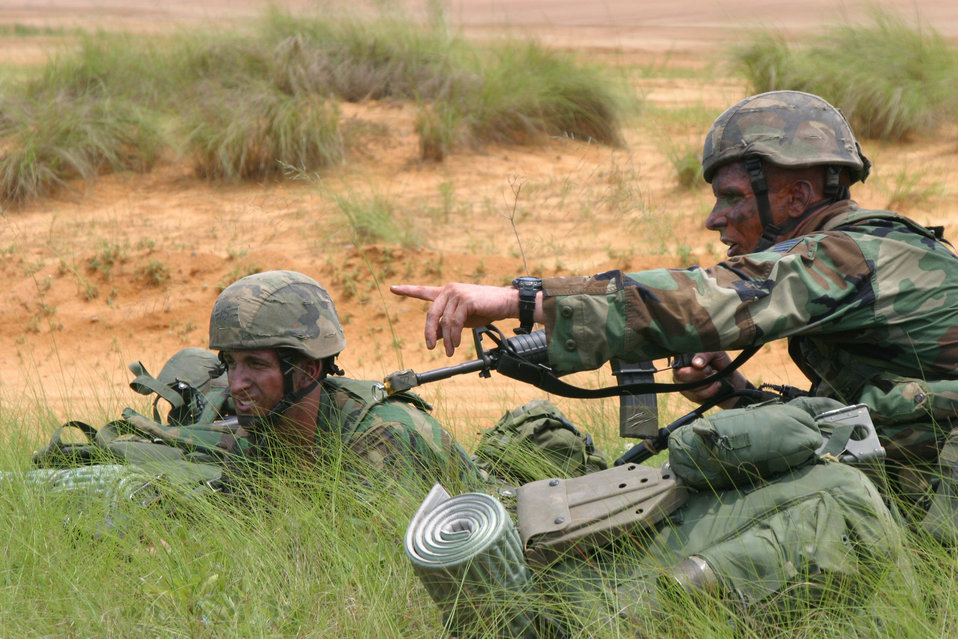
Airmen train to wear scarlet beret

CAMP MACKALL, N.C. -- Combat Control School students practice pulling security during a field exercise here. All students must meet rigorous standards to graduate the course and earn the right to wear the scarlet beret.